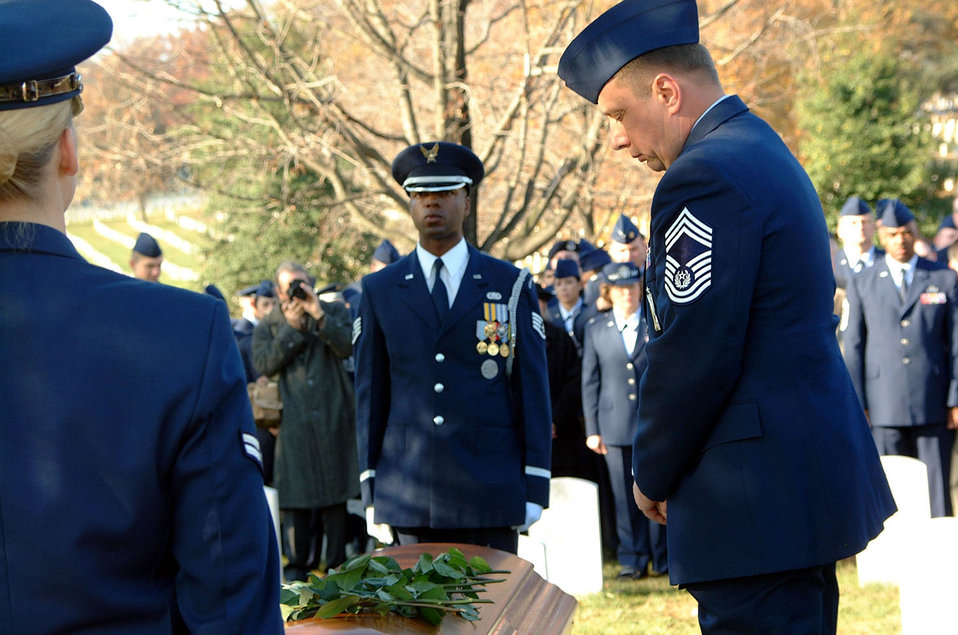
Final rest

ALINGTON NATIONAL CEMETARY, Va. -- Chief Master Sgt. of the Air Force Jim Finch stands before the casket of Medal of Honor recipient John L. Levitow, Nov. 17. Levitow died Nov. 8 at his home in Connecticut after a lengthy battle with cancer.